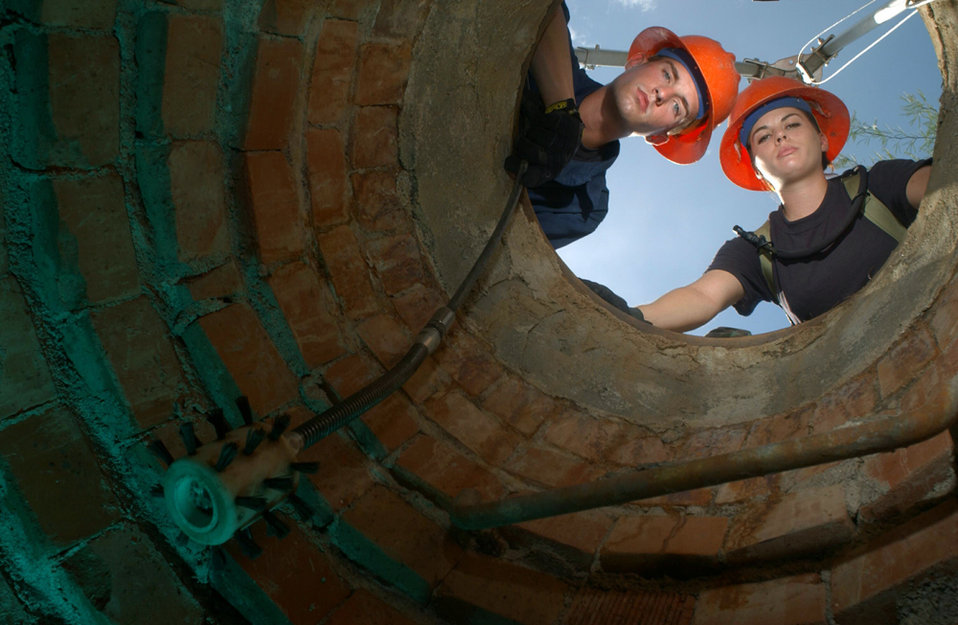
Oh well

DAVIS-MONTHAN AIR FORCE BASE, Ariz. -- Airmen 1st Class Chad Wolfe and Christina Holyoke help guide a sewer camera into a manhole to help them troubleshoot a plumbing problem they cannot get to on their own. This camera will send a video to a monitor so the plumbers on the outside will be able to determine the problem. Both Airmen are utilities apprentices with the 355th Civil Engineer Squadron here.